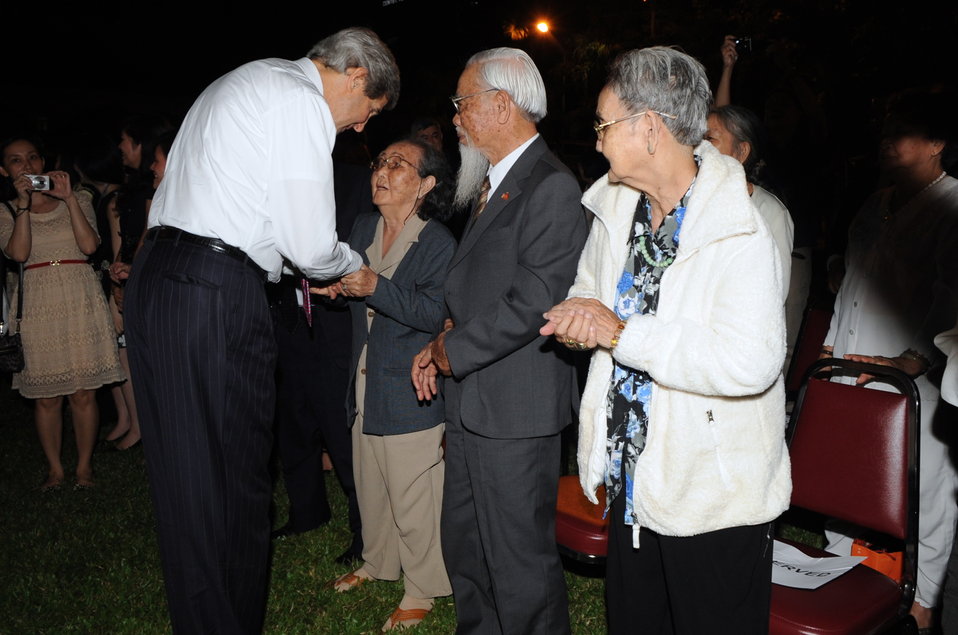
Secretary Kerry Greets Longtime Staff of Consulate Ho Chi Minh City

U.S. Secretary of State John Kerry, after addressing the current staff, greets Vietnamese citizens who worked at the U.S. Consulate in Ho Chi Minh City, Vietnam during the fall of Saigon in 1975.